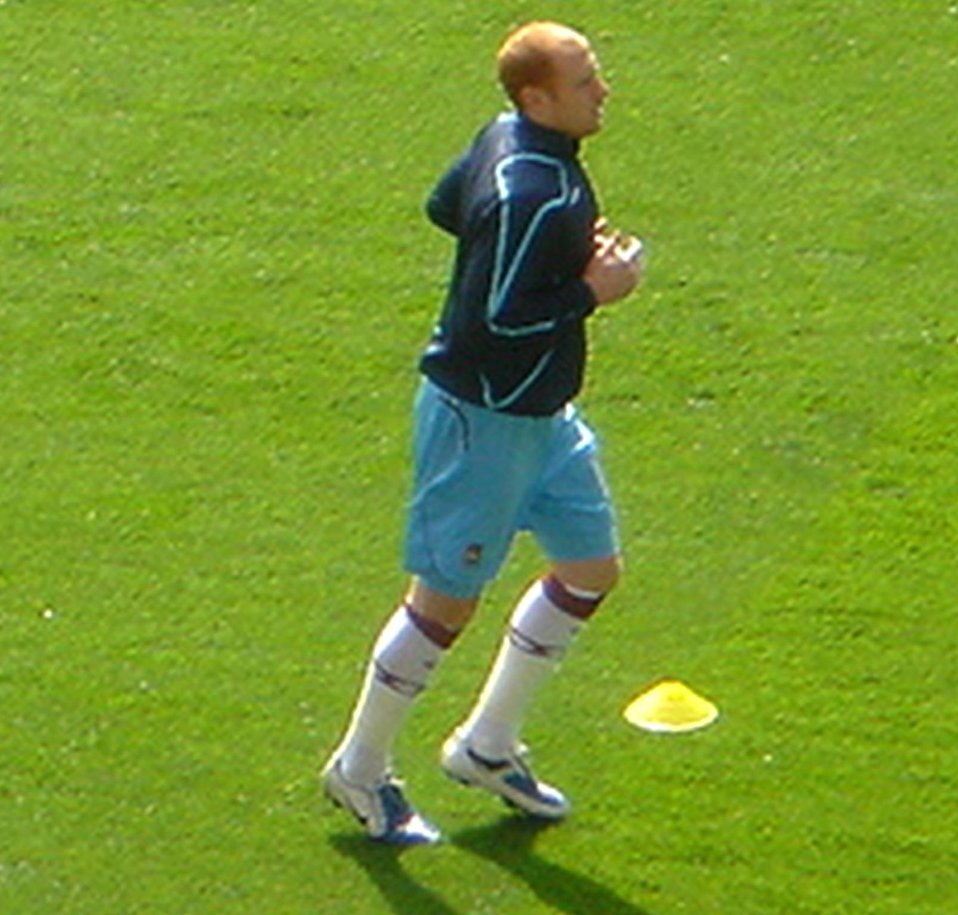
West Ham's James Collins in pre-match training before game against Aston Villa at Villa Park on 18 April 2009